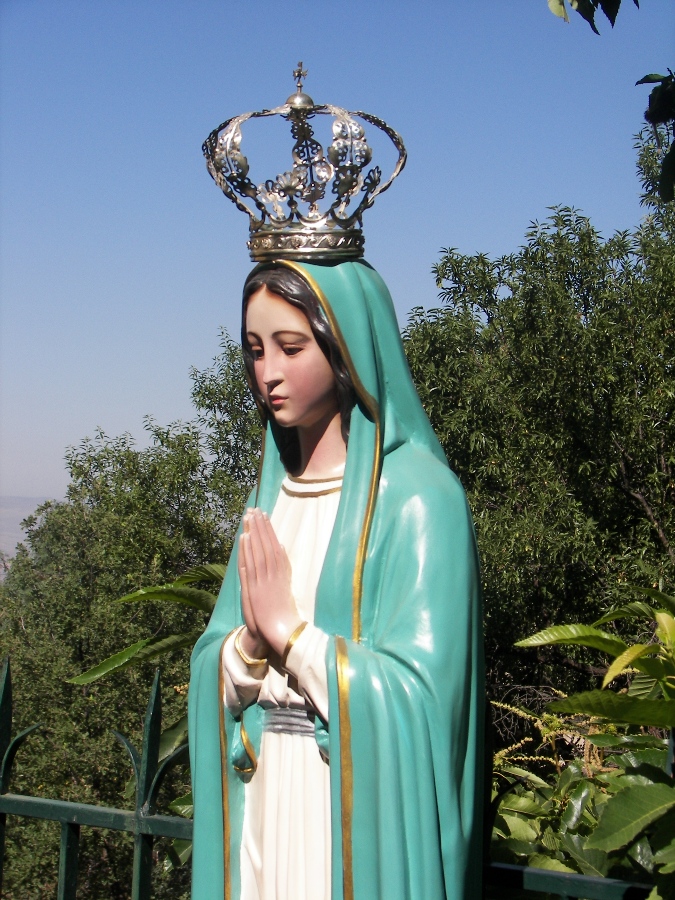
Italiano: Simulacro della Madonna Assunta, venerato nella chiesa dell'Immacolata a Santa Maria di Licodia. Festeggiata il 15 agosto.